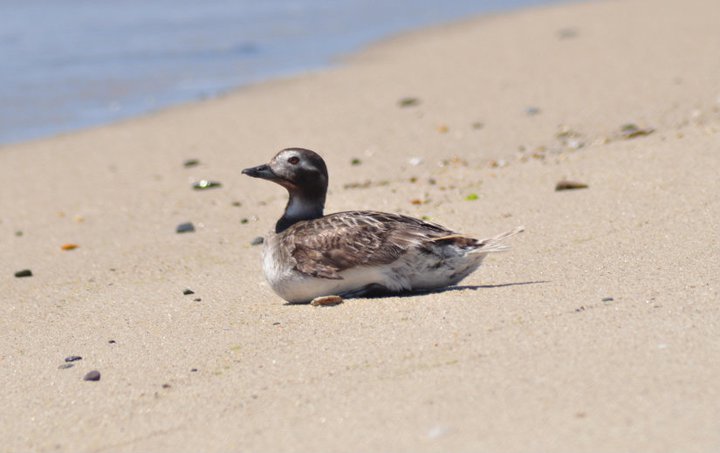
Long-Tailed Duck

A long-tailed duck at the Nantucket National Wildlife Refuge, MA.